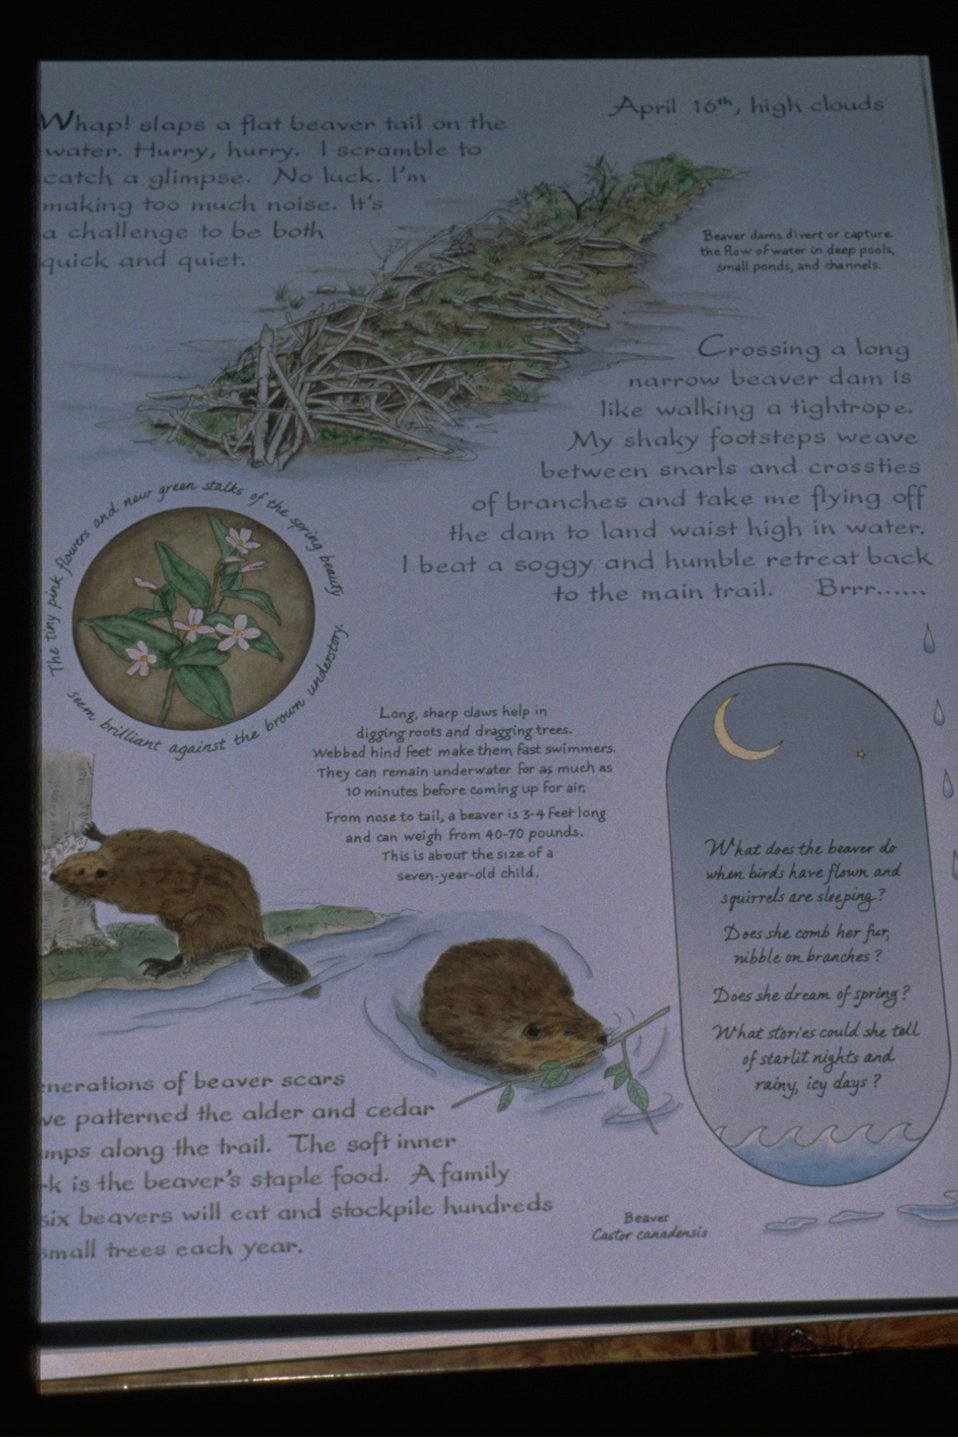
Interpretive Panels: Boardwalk Trail Journals.